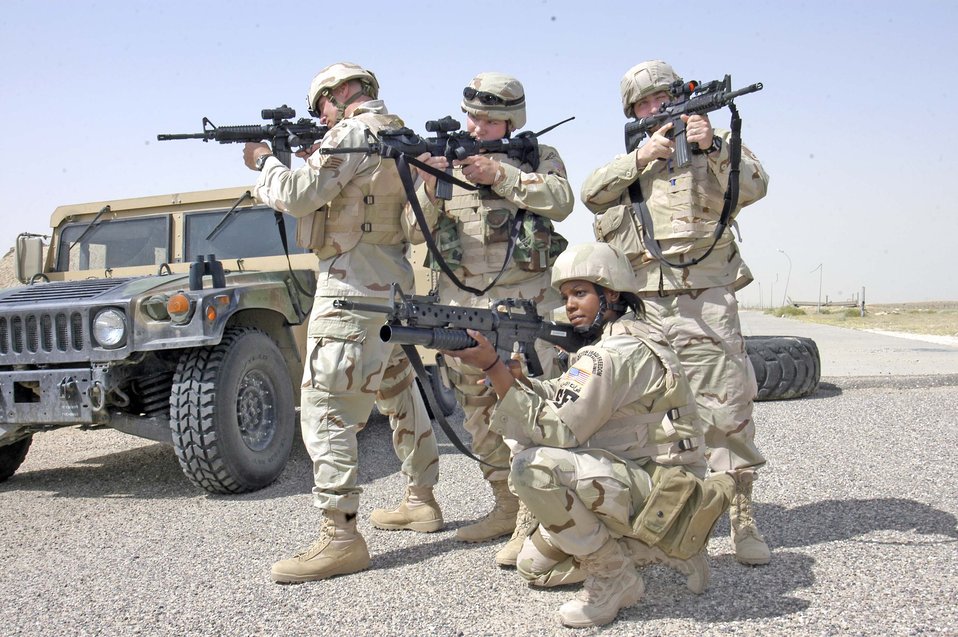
Researchers focused on satellite energy storage

A completed mini-Agile Multi-Purpose Satellite Simulator is shown with three flywheel mass simulators that spin between 16,000 and 40,000 revolutions per minute. The Space Vehicles Directorate staff at Kirtland Air Force Base, N.M., is using this simulator to demonstrate the innovative technology of combined attitude control and energy storage on a satellite.